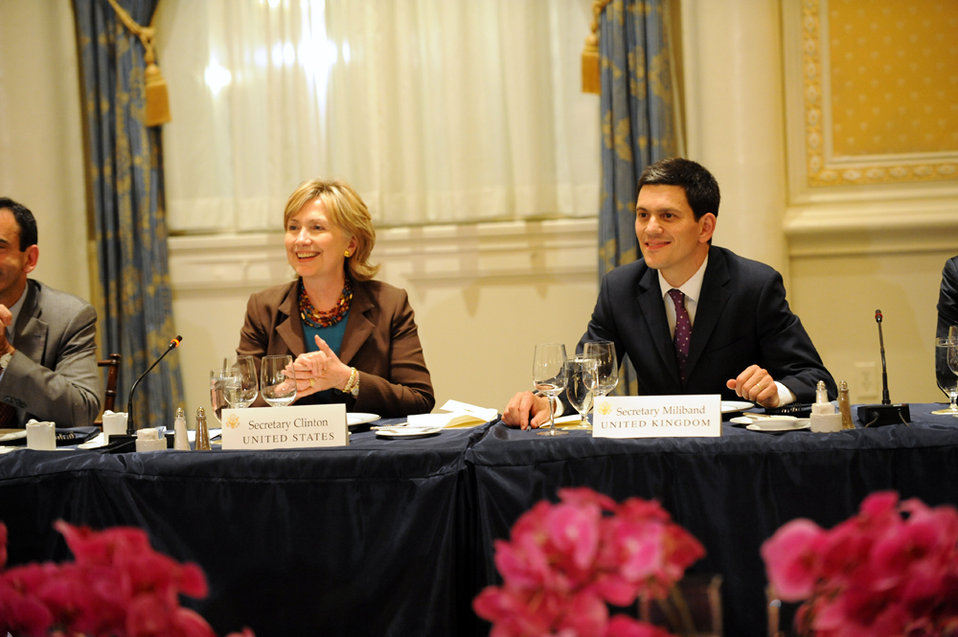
UNGA 2009: Secretary Clinton Hosts Transatlantic Dinner With EU and NATO Foreign Ministers

U.S. Secretary of State Hillary Rodham Clinton and U.K. Secretary of State for Foreign and Commonwealth Affairs David Miliband (right) at a transatlantic dinner with EU and NATO Foreign Ministers at the Waldorf Astoria hotel during the 64th Session of the UN General Assembly in New York City, New York September 22, 2009.